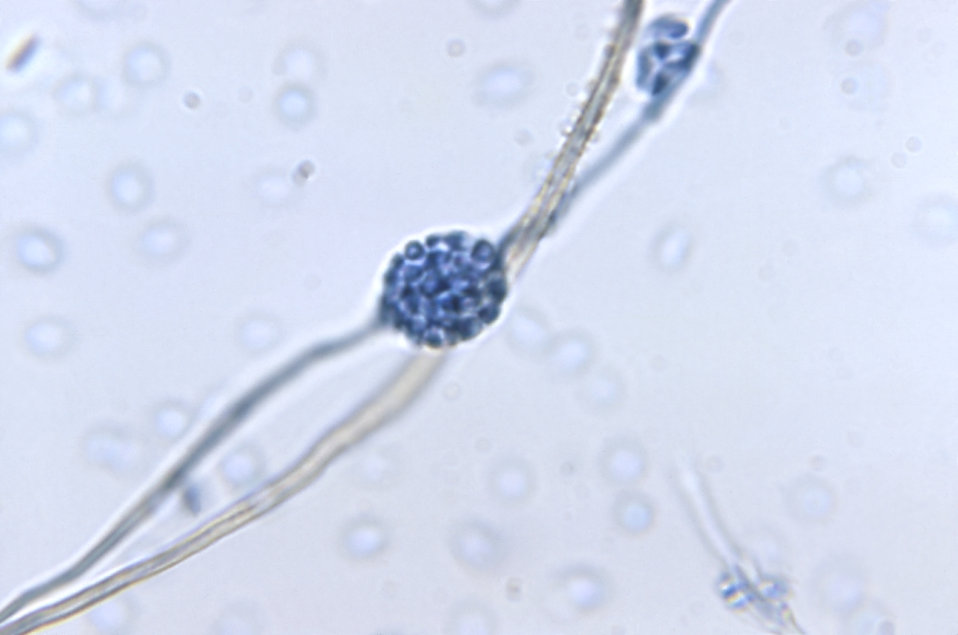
Magnified 1125X, this photomicrograph revealed some of the ultrastructural morphology exhibited by a cluster of Phialophora parasitica fungal conidia, which is attached to a conidiophore from which the former structure was derived. Compared to PHIL 10893, which reveals more of the detail associated with the filamentous conidiophore, this image reveals the cluster of conidia in greater detail.